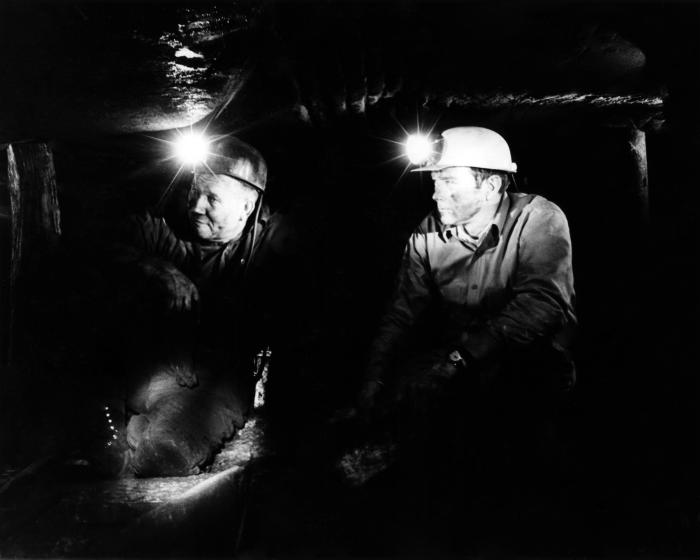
This historic image provided by the Center for Disease Control's (CDC), National Institute for Occupational Safety and Health (NIOSH), depicted two men inside a coal mine, crouched down low beneath the ceiling support beams. Atop each man's head, he wore a headlamp to light his way through the mine's small confines. Neither man was wearing what would now be considered as an appropriate filtered breathing device. Mining coal, especially under circumstances such as these close quarters, facilitated coal dust inhalation, thereby, predisposing miners to the long-term negative health effects of this profession such as 'black lung disease', or 'coal-workers' pneumoconiosis' (CWP). Today, the Federal government's stringent regulations on the level of coal dust permissible in the air of a coal mine, and the requisite use of filtered breathing devices, has dramatically lowered the number of cases of black lung disease.